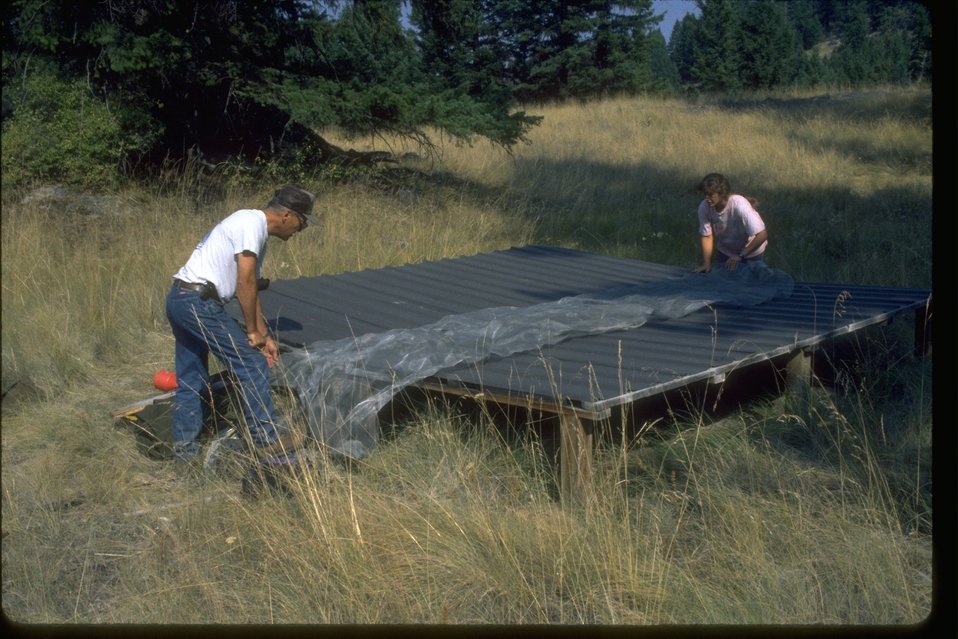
Wildlife biologists construct water catchment for bighorn sheep on Vulcan Mountain in Ferry County, Washington.